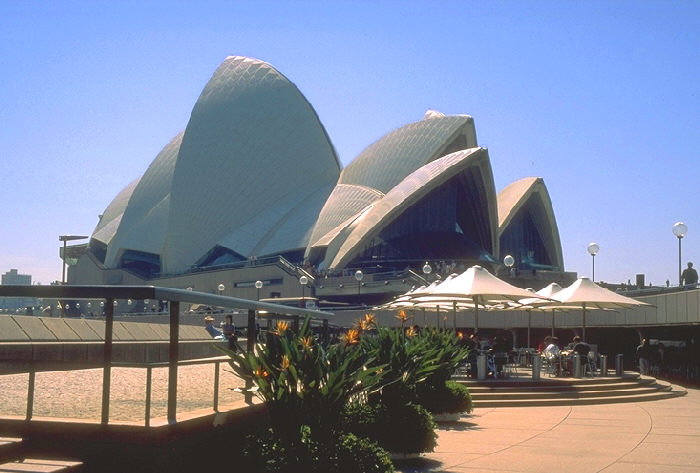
Opera House, Sydney, Australia.